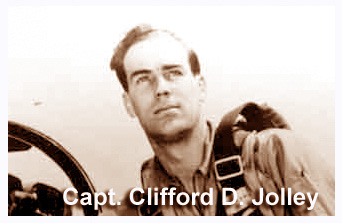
Capt. Clifford D. Jolley, flying the F-86 Sabre